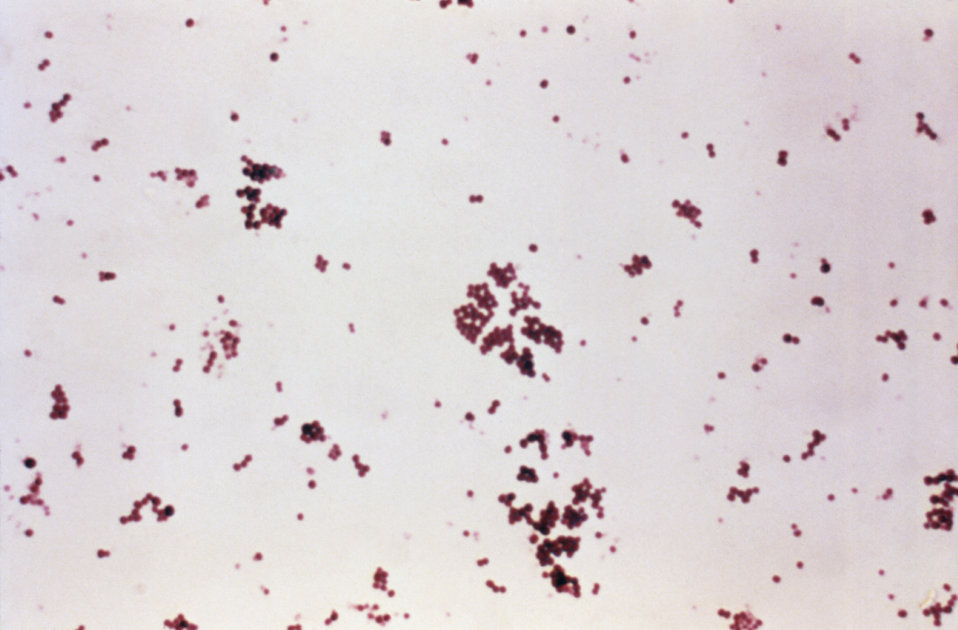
This Gram-stained micrograph reveals Staphylococcus aureus bacteria, which can be responsible for Toxic Shock Syndrome.